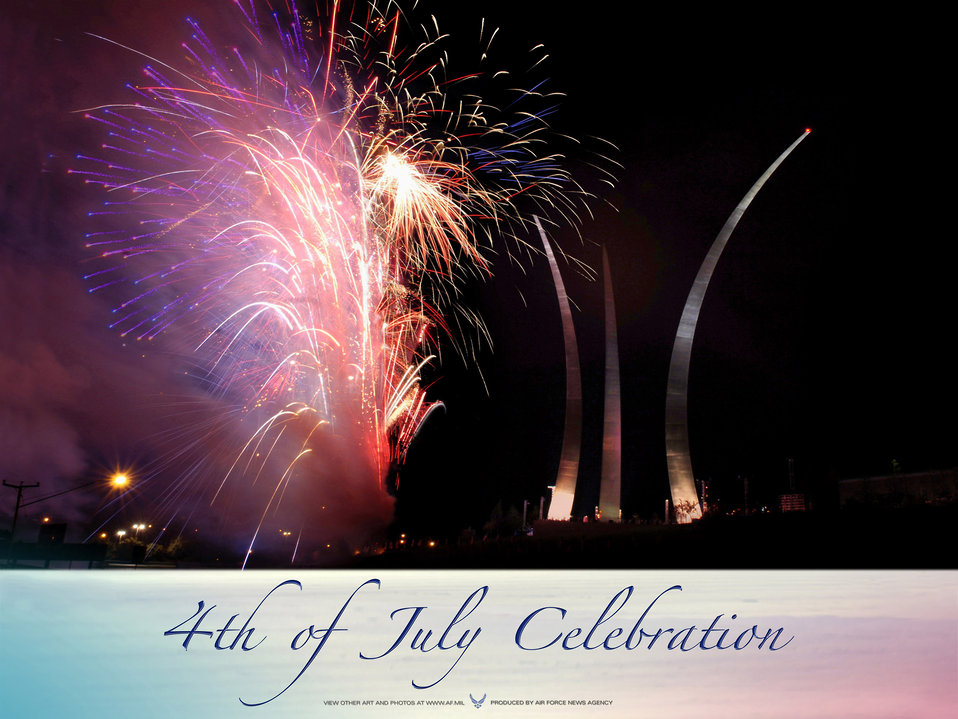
Sparkling the spires

Fireworks illuminate the Air Force Memorial in this poster for the 4th of July. The poster, created by Virginia Reyes of the Air Force News Agency, features a U.S. Air Force photo by Senior Airman Desiree L. Andrejcik. Requests for a PDF for local printing can be made to art@afnews.af.mil.